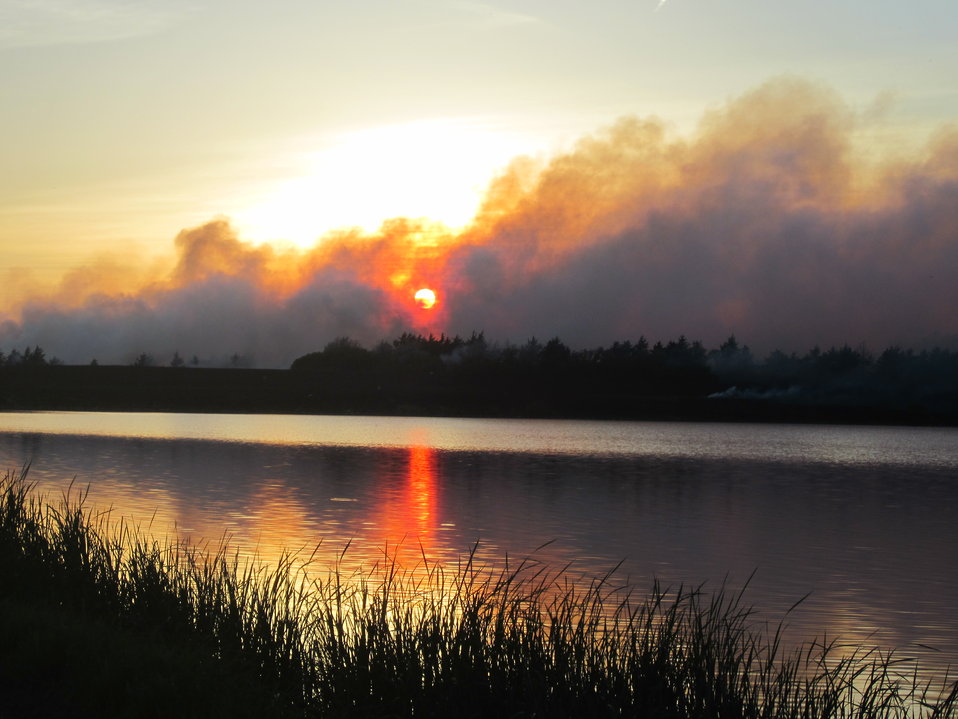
2012 Prescribed Fire

Spring prescribed fire in Madison, SD WMD.

Credit: Jeff Meadows / USFWS

Photo Contest Entry #181